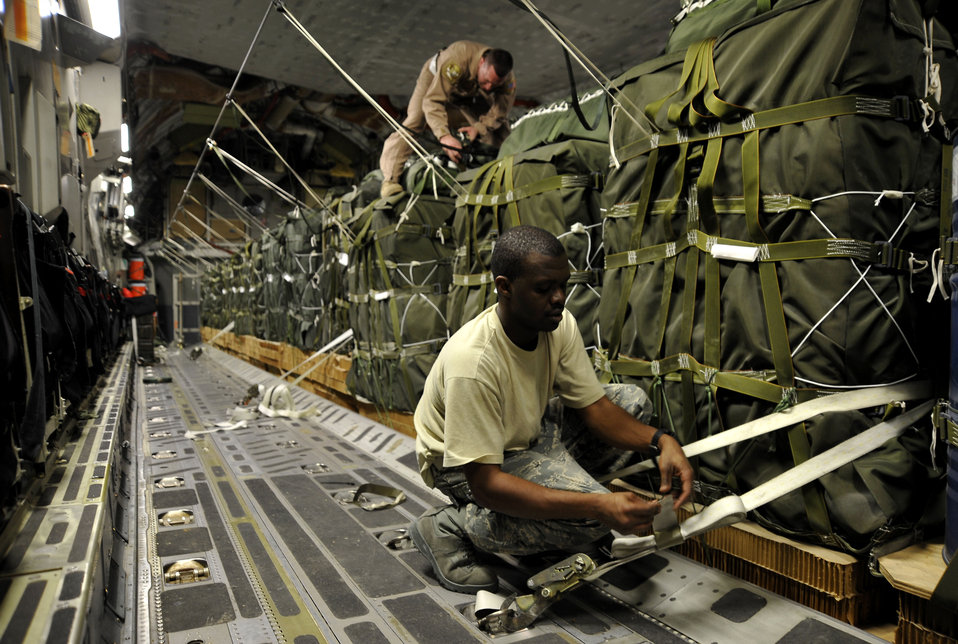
Airmen, Soldiers airdrop supplies to Afghanistan

Senior Airman Albert Taylor, 816th Expeditionary Airlift Squadron loadmaster, secures a container delivery system bundle while Tech. Sgt. Todd O' Bryant, a joint airdrop inspector from the 816th EAS, inspects bundles on board a C-17 Globemaster III at an air base in Southwest Asia Jan. 9, 2010. The CDS bundles will be air dropped to support U.S. forces on the ground in Afghanistan.